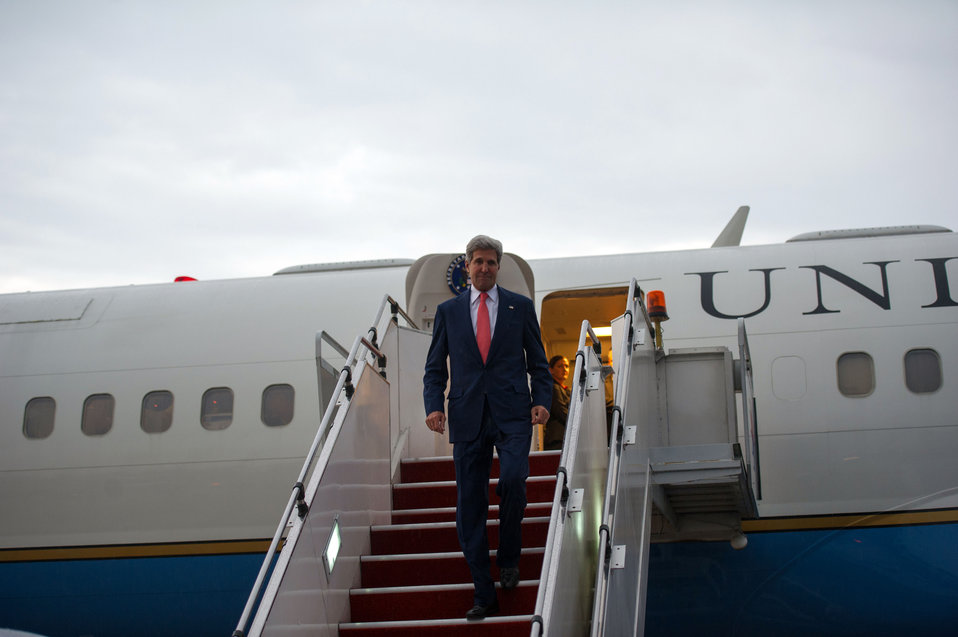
Secretary Kerry Arrives in Kuala Lumpur, Malaysia

U.S. Secretary of State John Kerry arrives in Kuala Lumpur, Malaysia, on October 10, 2013.